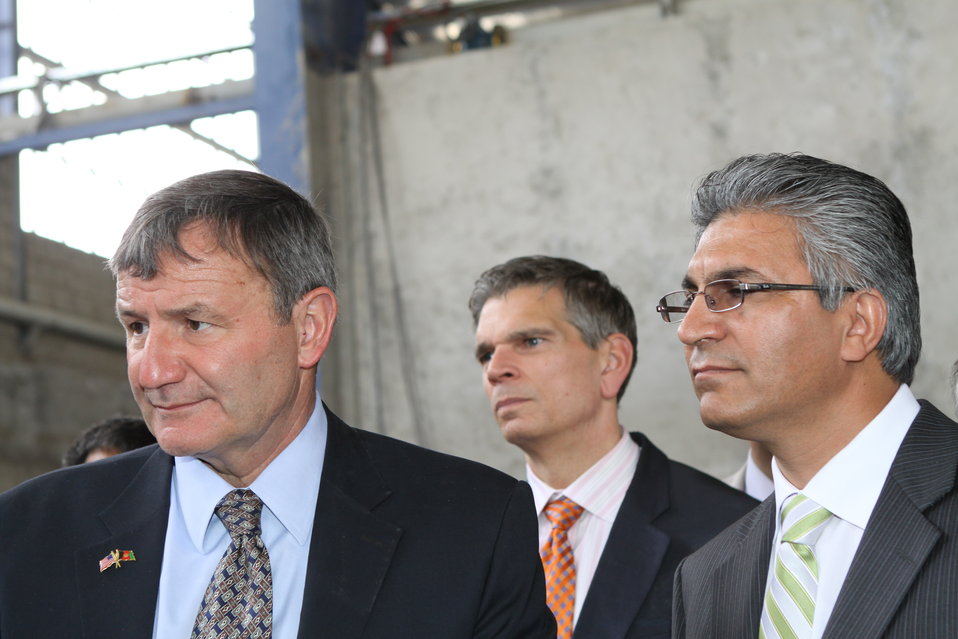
100525 Hirat Marble Conference 446